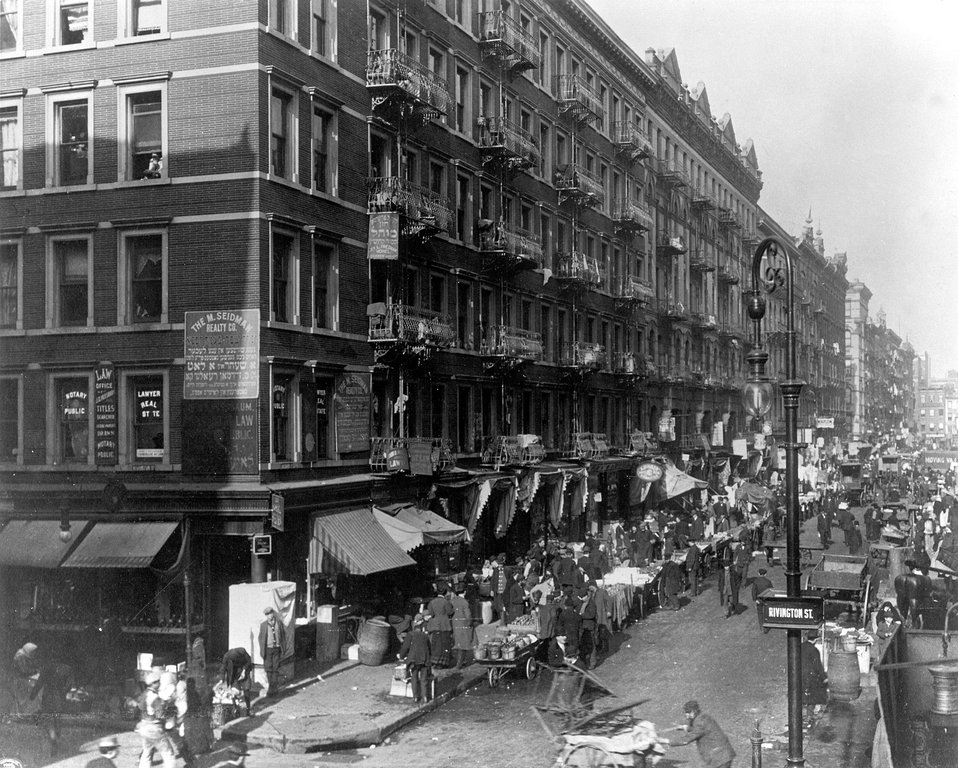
New York City: Jewish sector ('the ghetto') on the lower east side of the city in 1909.